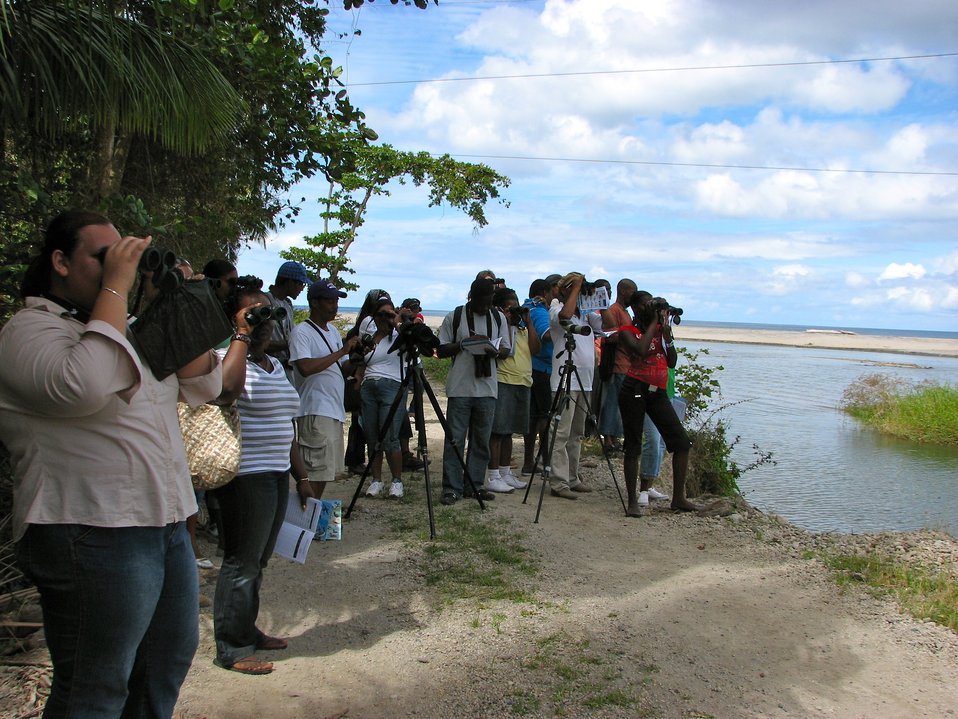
Birding at Layou - 5

SCSCB trainees go birding.